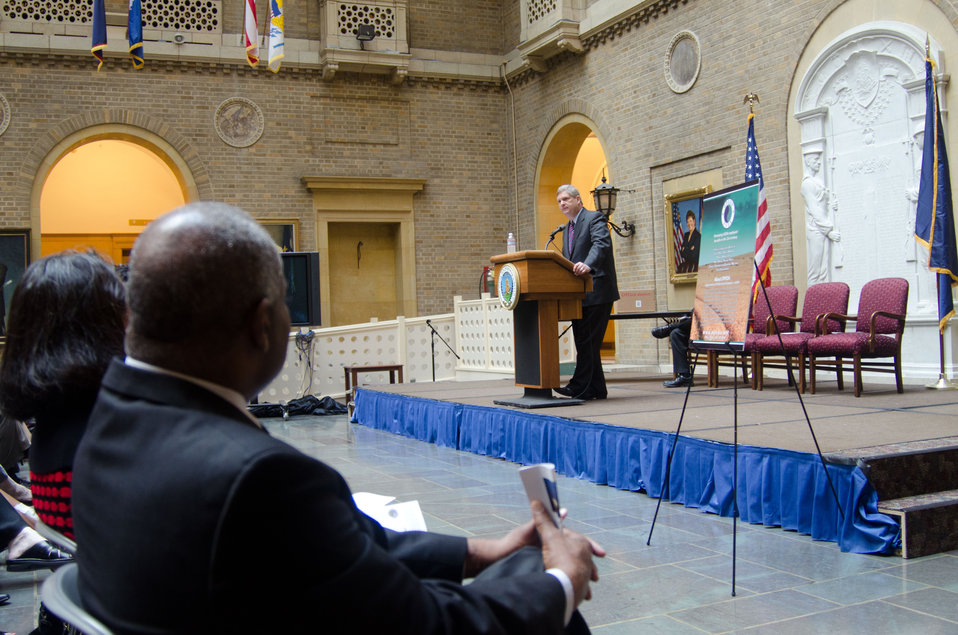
Agriculture Secretary Tom Vilsack, made remarks during the 2011 Unsung Hero Awards Program on Tuesday, May 3, 2011, at the U.S. Department of Agriculture Whitten Building in Washington, DC.